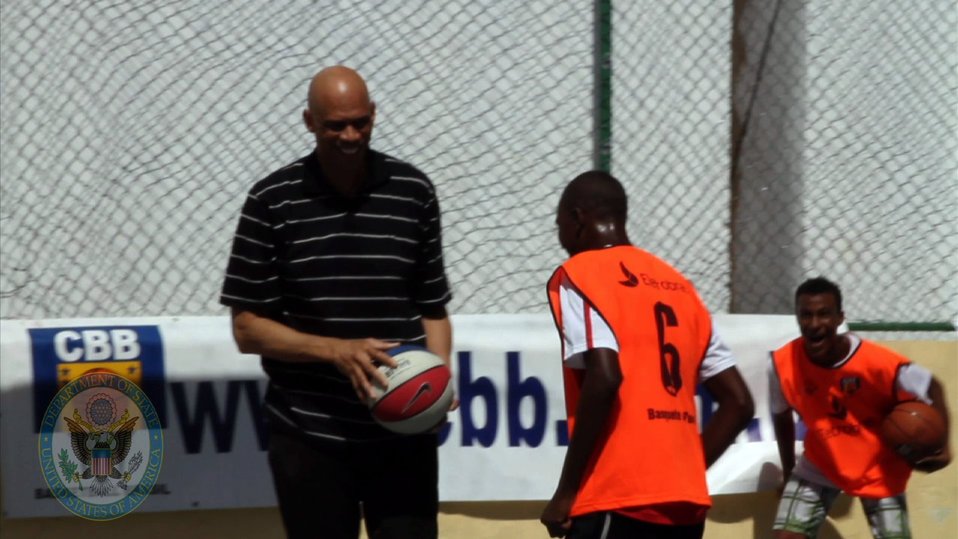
Cultural Ambassador Kareem Abdul-Jabbar Plays Basketball

Hall-of-Famer and Global Cultural Ambassador for the U.S. Department of State Kareem Abdul-Jabbar plays basketball with youth in Salvador, Brazil, on January 24, 2012.